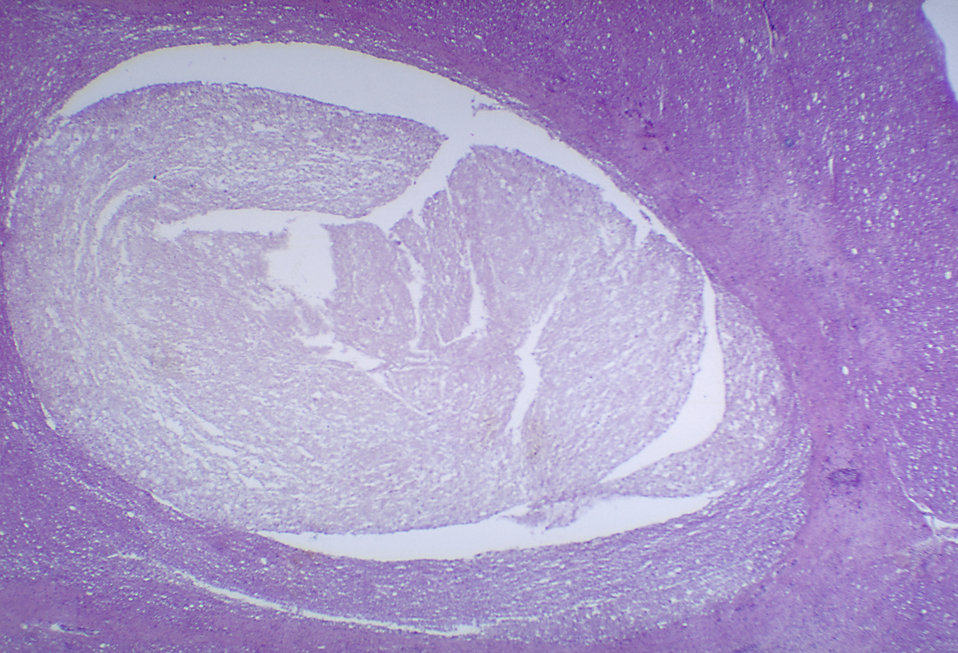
A photomicrograph of the thoracic spinal cord depicting degenerative changes due to Polio Type III.